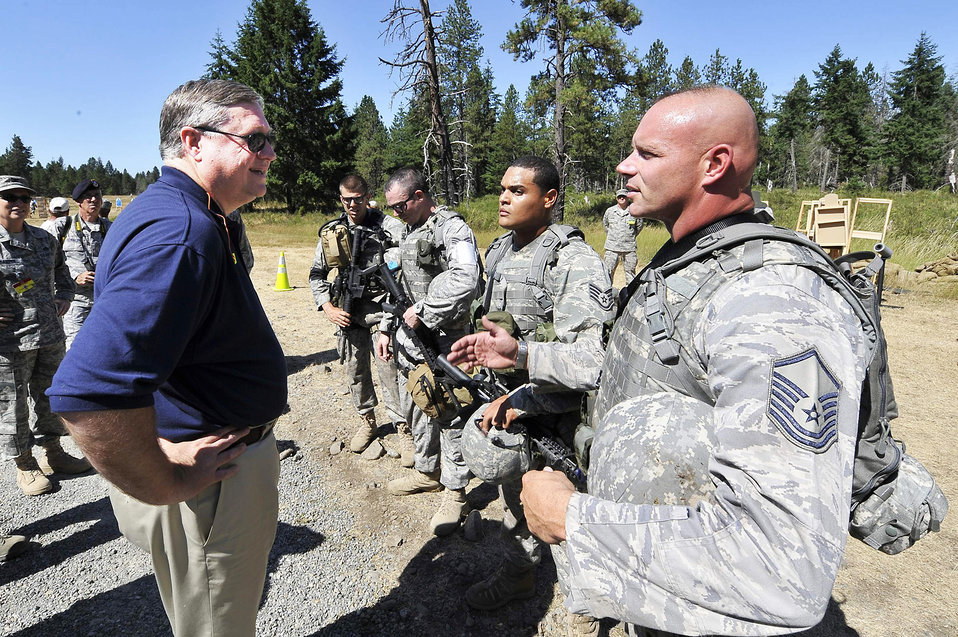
Secretary Donley visits mobility air forces competition

Master Sgt. Russell Michaud discusses the security forces weapons competition with Secretary of the Air Force Michael B. Donley during Air Mobility Rodeo 2009 July 22 at McChord Air Force Base, Wash. Sergeant Michaud is assigned to the 436th Security Forces Squadron from Dover Air Force Base, Del.